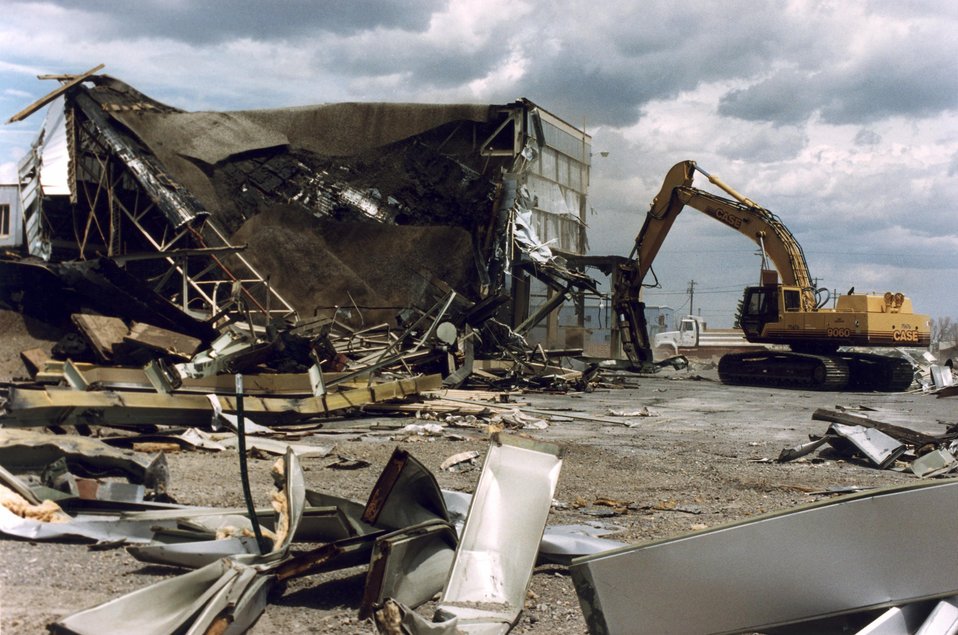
DISMANTLING THE VEHICLE MAINTENANCE AND REPAIR SHOP AT THE CENTRAL FACILITIES AREA OF WAG 4.